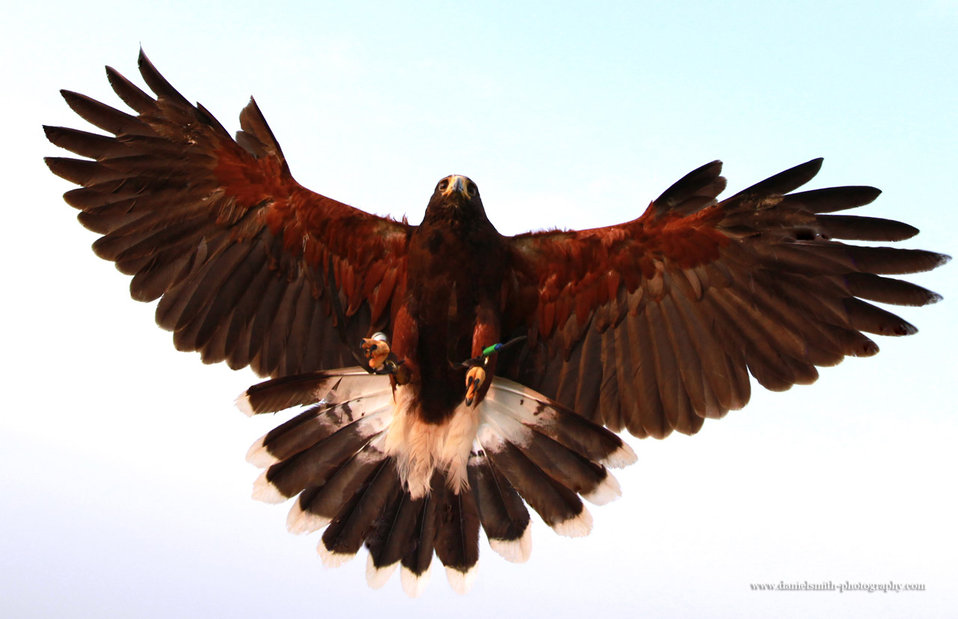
Bird of prey landing

A shot taken of a bird of prey landing, the bird is a harris hawk..